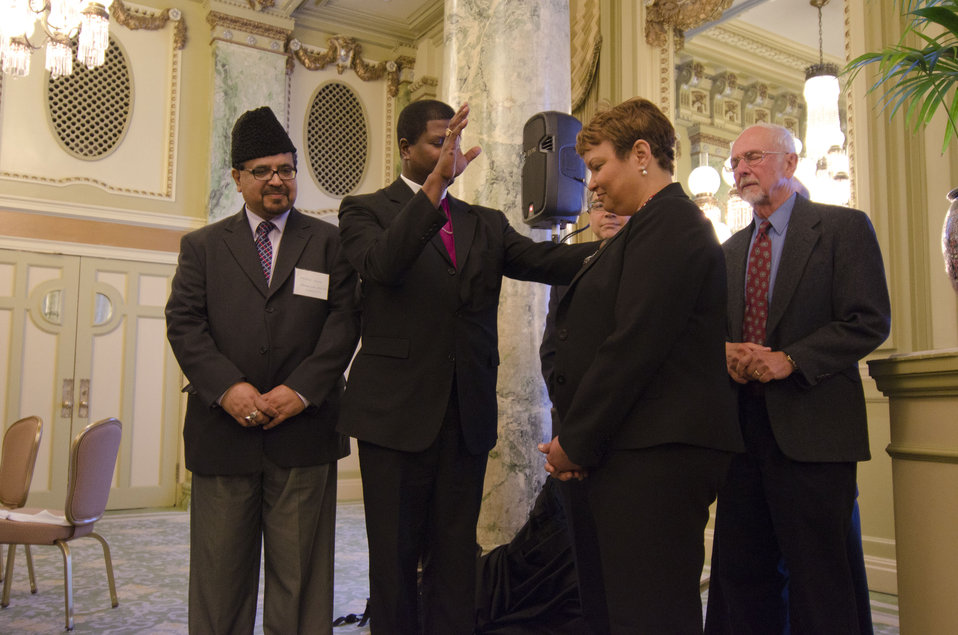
2011-05-05 NRCCCPrayerBreakfast 081

US EPA Administrator Lisa P. Jackson recieving blessing from Carlos Agnesi, Inter-religious Council of Mexico, Bishop Eugene Sutton, Episcopal Diocese of Maryland, Rabbi Warren Stone and Rev. Owen Owens, National Council of Churches at the National Religious Coalition on Creation Care Prayer Breakfast from